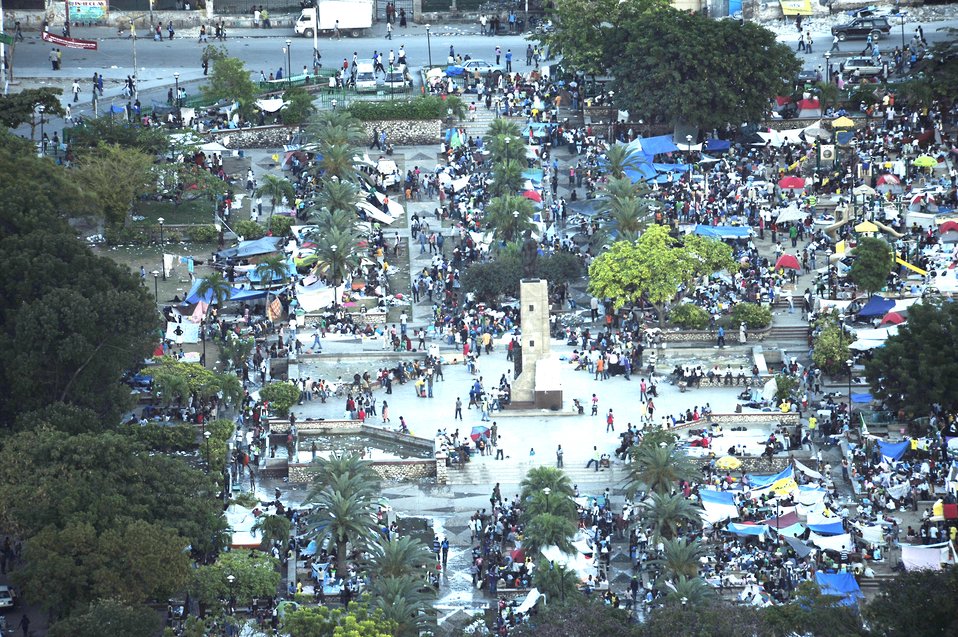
Haiti Earthquake Relief

Image of Port-au-Prince, Haiti taken Jan. 15, 2010 following a magnitude 7 earthquake that hit the city Jan. 12, 2010. Department of Defense assets have been dispatched to Haiti to assist with humanitarian assistance and disaster relief.